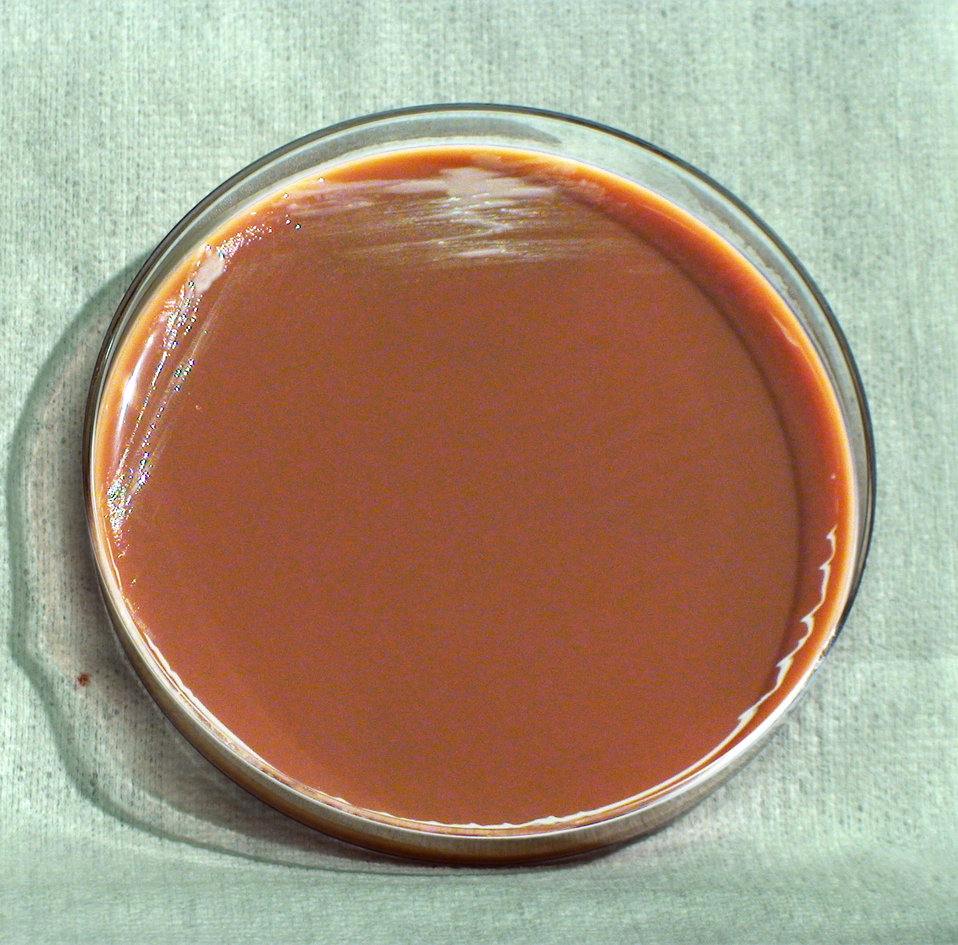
This photograph depicts the colonial morphology displayed by Gram-negative Brucella suis bacteria, which was grown on a medium of chocolate agar, for a 72 hour time period, at a temperature of 37�C. Note that PHIL 12479 depicts a closer view of these bacterial colonies. See PHIL 12475, for a view of these bacteria grown on the same medium and temperature, but for only one-third the time period (24hr). Also note PHIL 12476 and 12477, again depicting B. suis organisms, which were grown on both the same medium and temperature, but for only two-thirds time period (48hr). Brucella spp. bacteria are pathogenic towards humans, and cause a disease known as brucellosis.